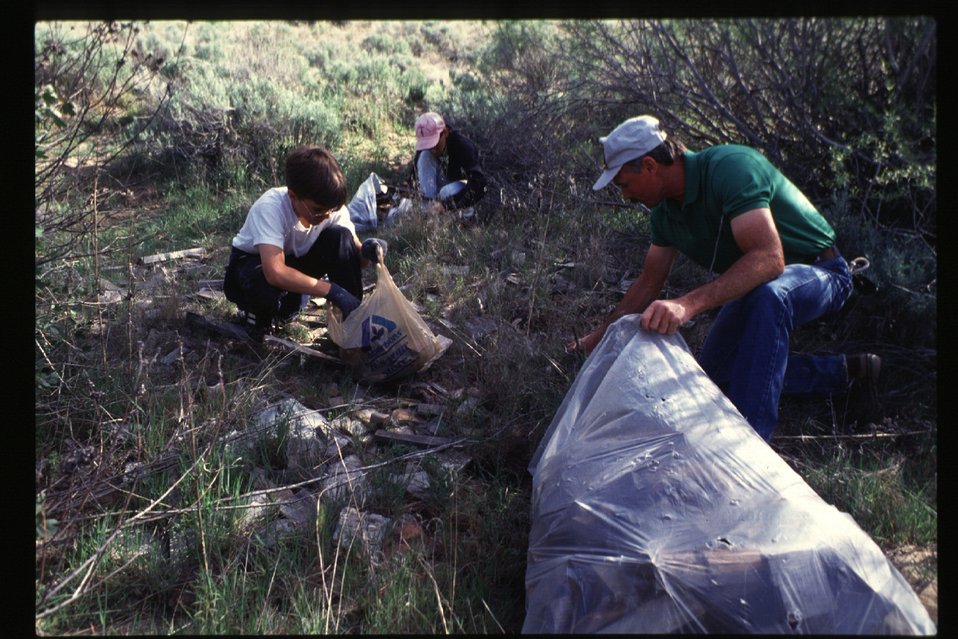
Rangeland and environmental education Boise Front Tending our Foothills Litter Pickup Four Rivers Field Office LSRD Lower Snake River District